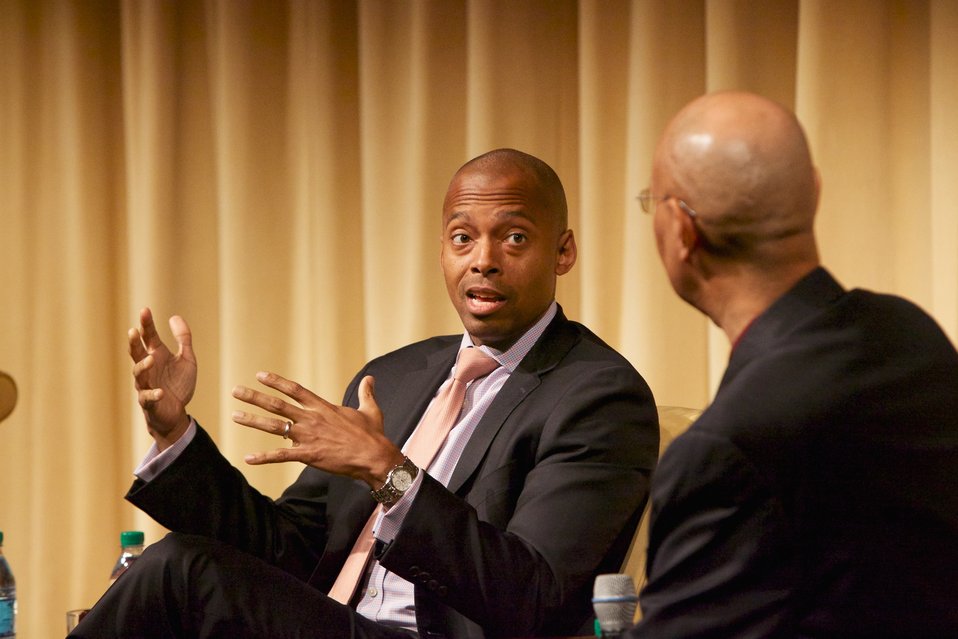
Solomon Northup's Odyssey